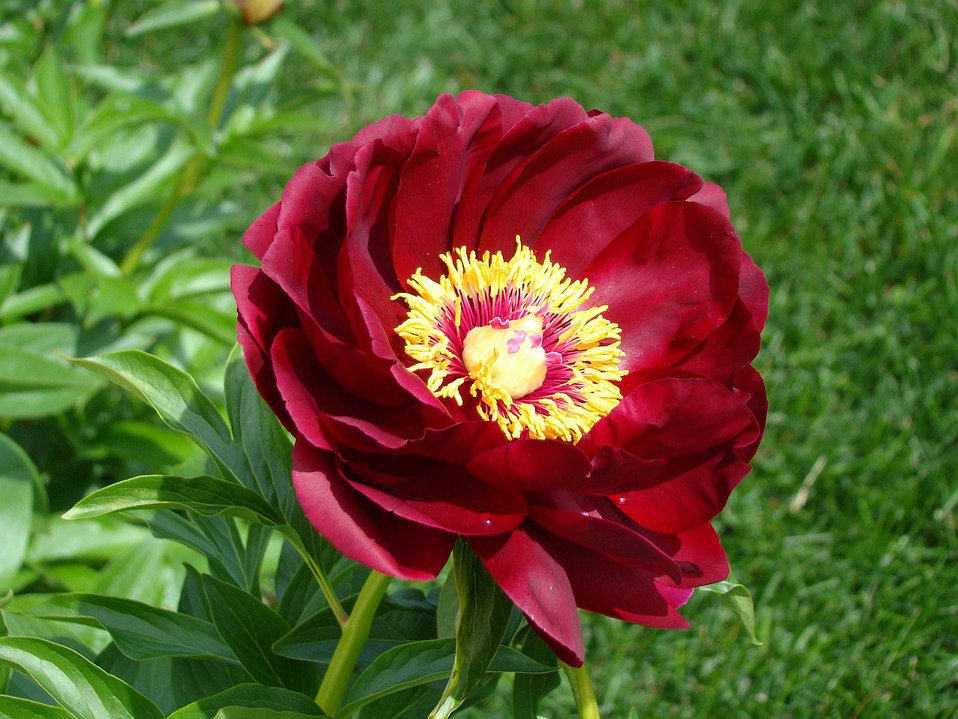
Peony flower

Beautiful peony in the garden.